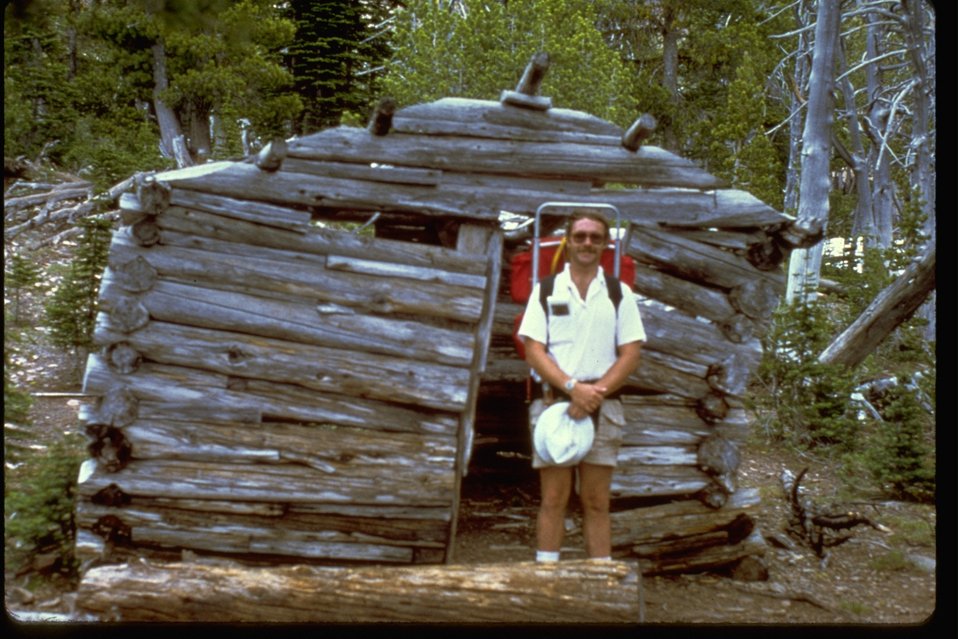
Person backpacking to historical site.